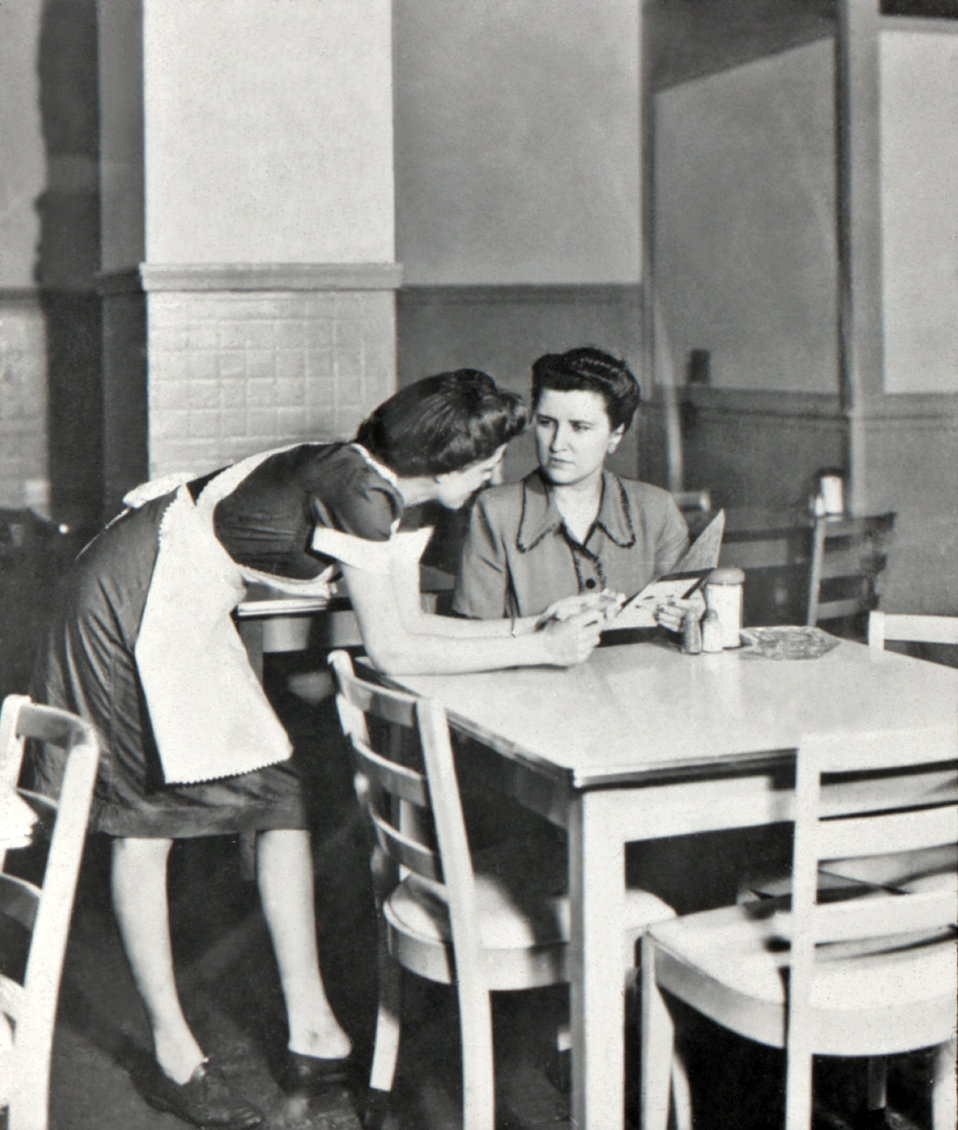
Shot in the 1950s, this image depicted a restaurant food server, whose body positioning placed her into close proximity with the patron, which increased the risk of transferring a possible communicable infection. The server was placing her arms on the customer's table, and standing closer than necessary in order to perform her task, thus increasing the chance of transferring an infectious disease.